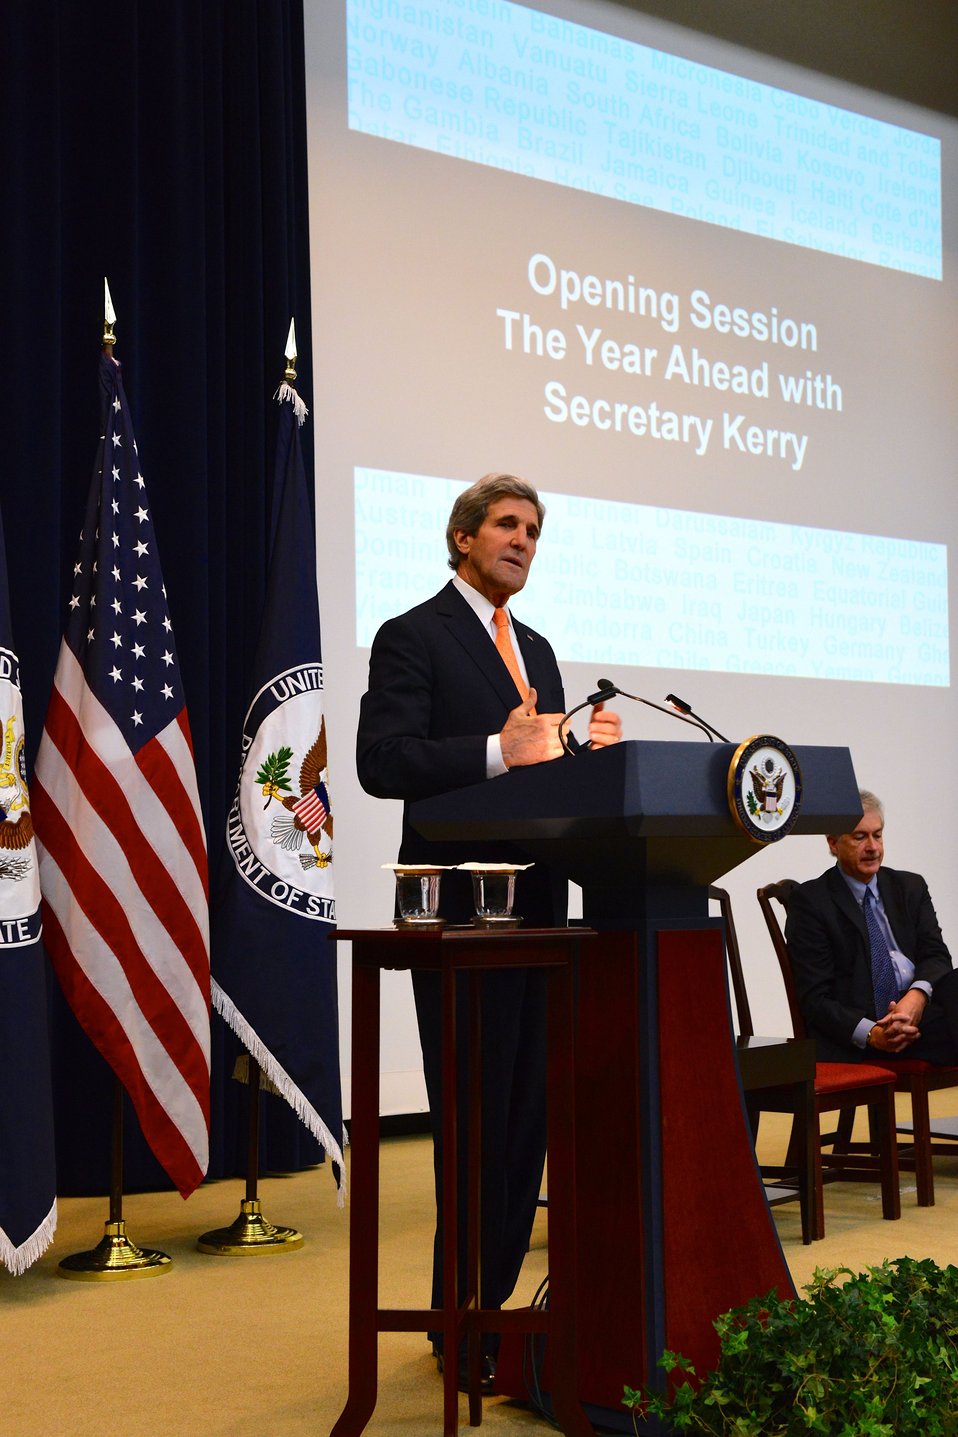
Secretary Kerry Delivers Remarks at the Global Chiefs of Mission Conference

U.S. Secretary of State John Kerry delivers opening remarks at the Global Chiefs of Mission Conference at the U.S. Department of State in Washington, D.C., on March 10, 2014.